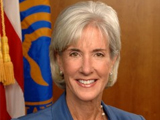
Sebelius 160x120